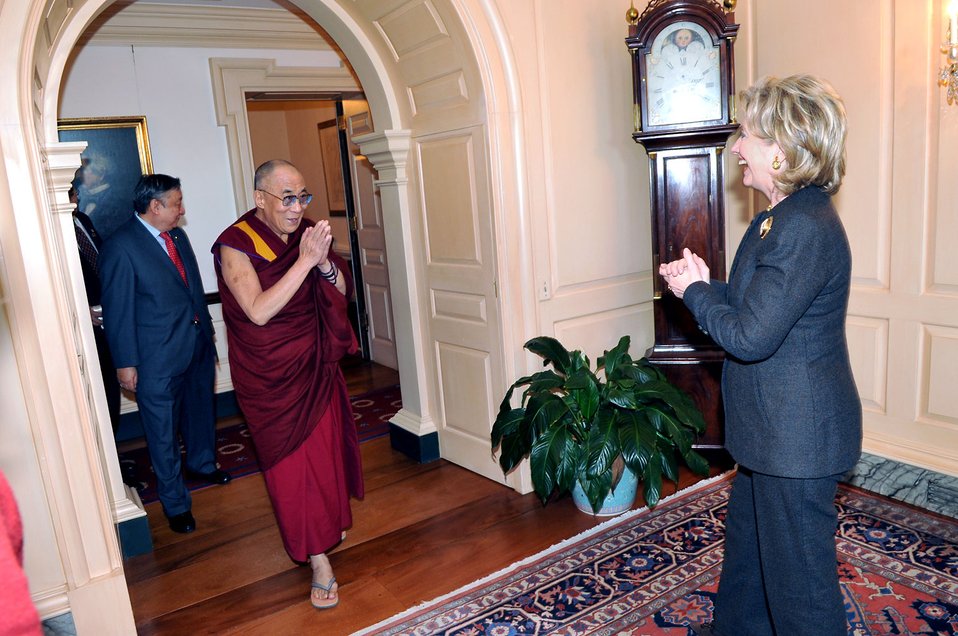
Secretary Clinton Meets With His Holiness the Dalai Lama

U.S. Secretary of State Hillary Rodham Clinton meets with His Holiness the Dalai Lama, at the Department of State in Washington, DC February 18, 2010.